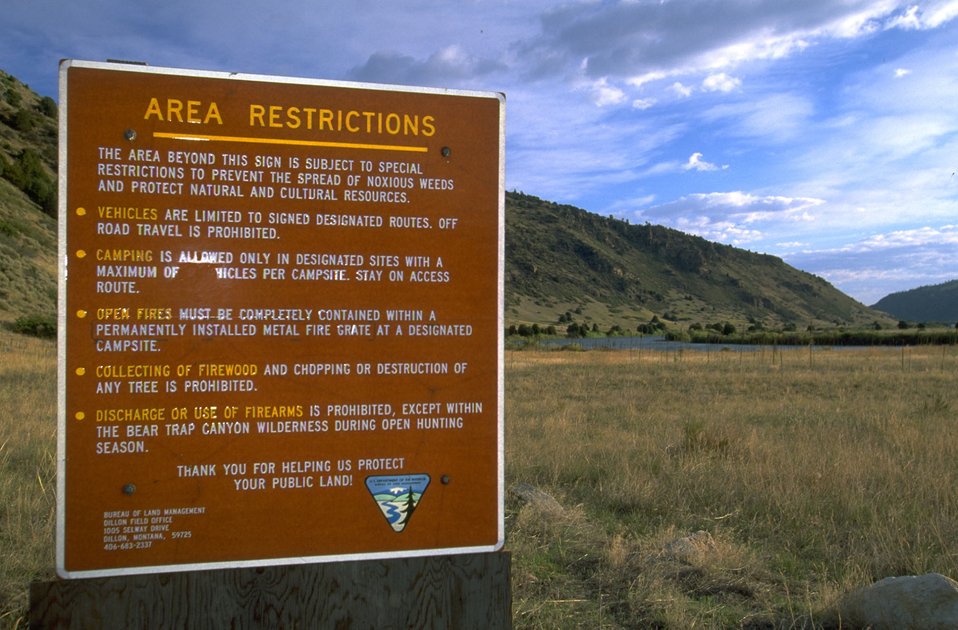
Area Restrictions Sign